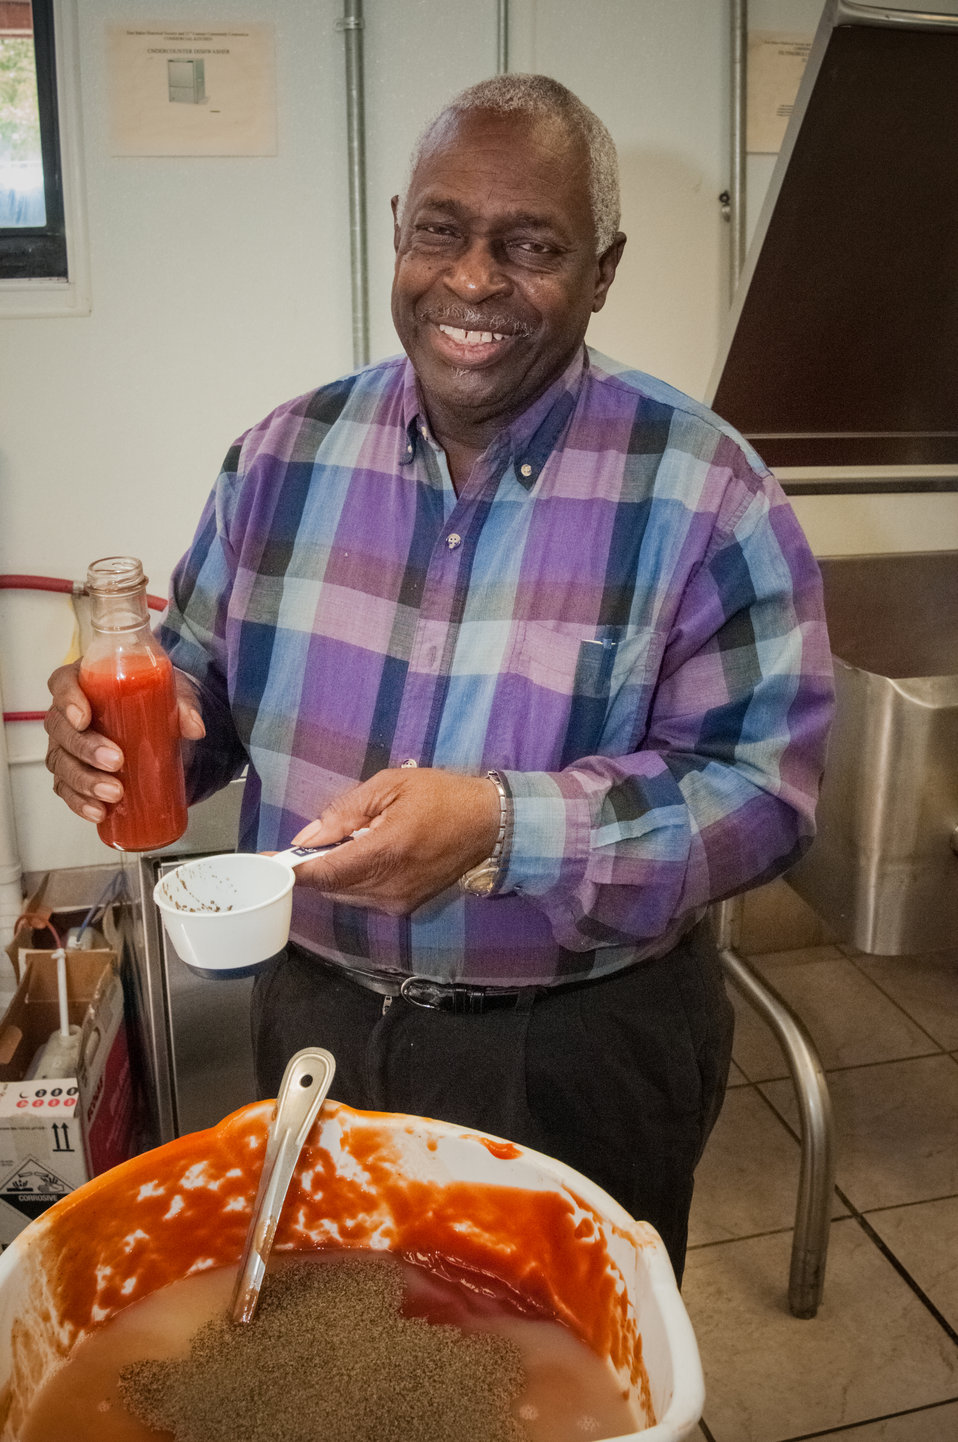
Clarence Cowart prepares his recipe for CC’s Home-style BBQ Sauce in the incubator kitchen at the East Baker Historical Society Community Center in Newton, Baker County, GA on Mar. 7, 2013. The East Baker Historical Society Community Center secured a U.S. Department of Agriculture (USDA) Rural Development (RD) Community Facilities (CF) Loan for the kitchen that enabled residents to prepare catered meals and to prepare and package food products. The USDA Strike Force Initiative has designated Baker County, GA as a Strike Force county selected to receive assistance to relieve persistent poverty in historically high-poverty counties.